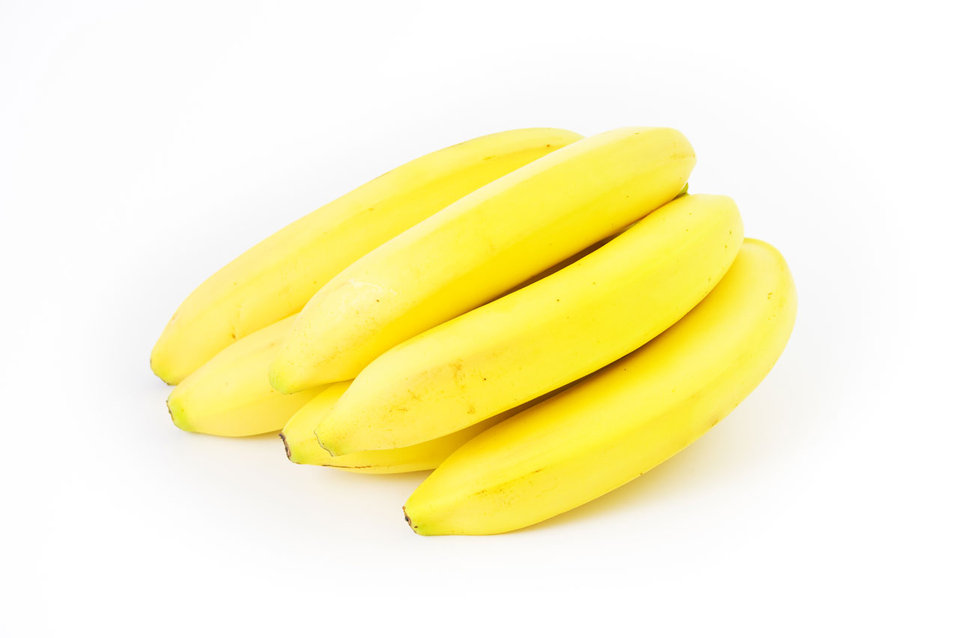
Bananas

Six yellow bananas..